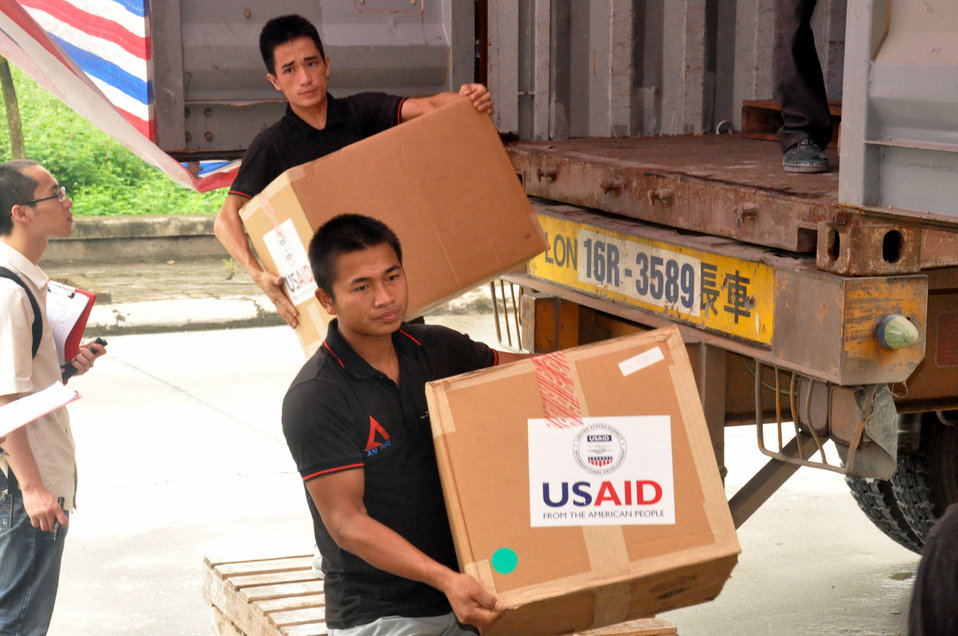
U.S. Provides Protective Gear to Help Prevent Disease Outbreaks